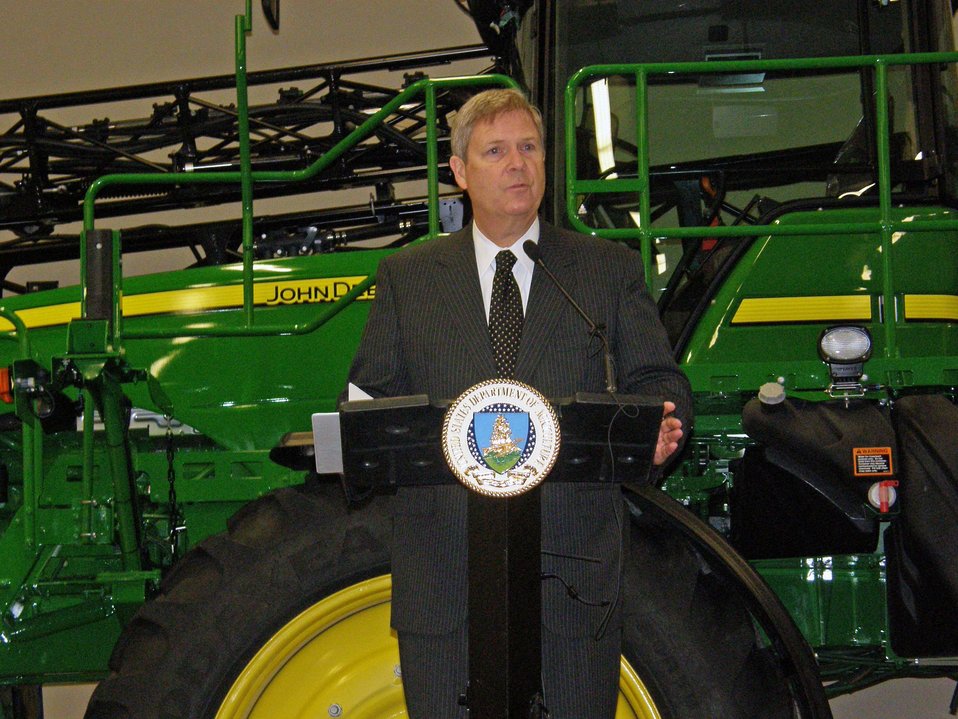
Agriculture Secretary Tom Vilsack toured the John Deere Plant in Des Moines, IA on Monday, Oct. 24, 2011. Secretary Vilsack stressed that the 2012 Farm Bill must stay focused on providing effective aid to farmers affected by natural disasters while increasing research funding and maintaining a commitment to conservation.